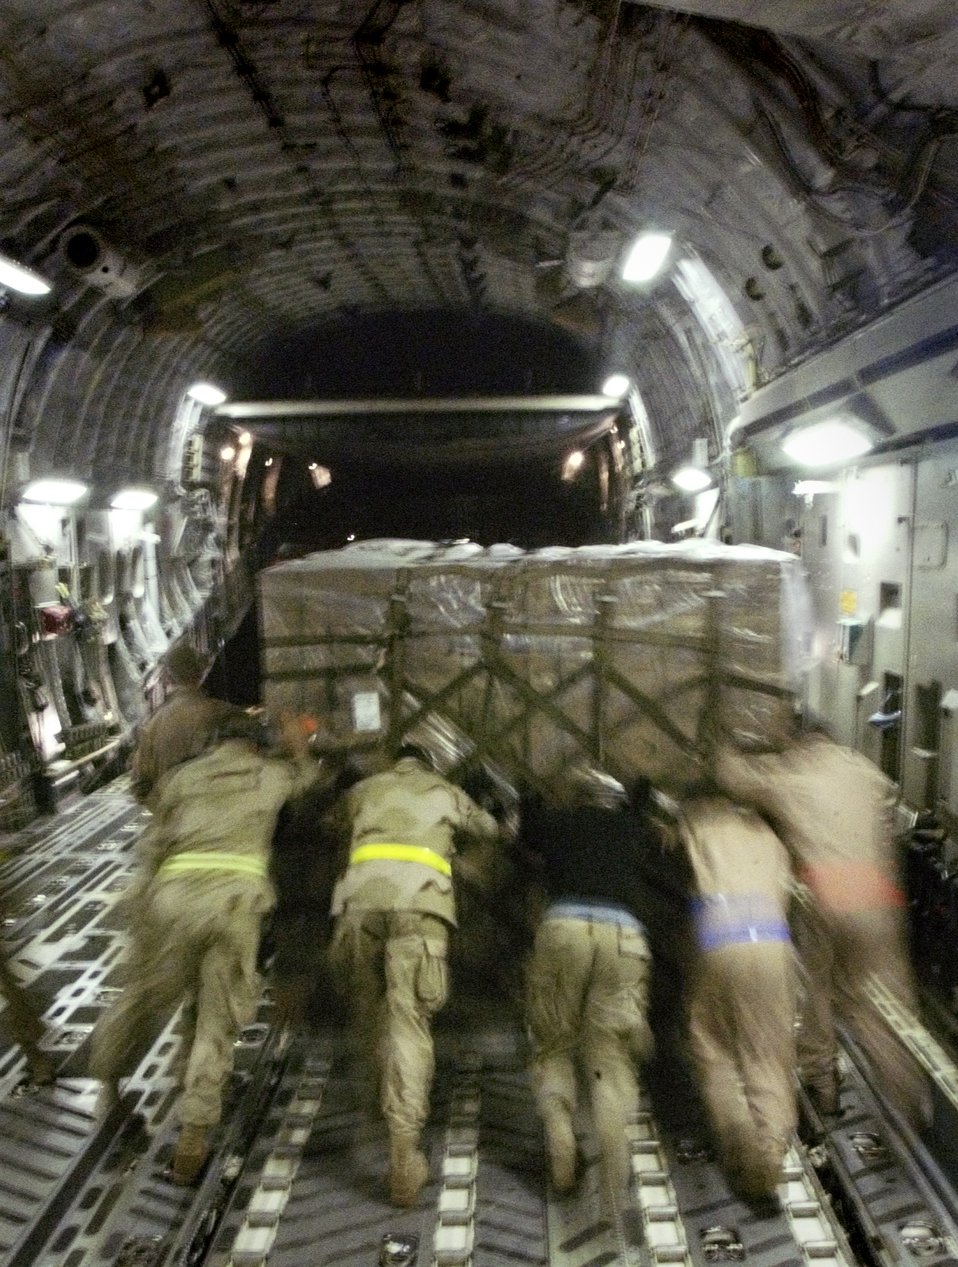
Team effort

CHAKLALA AIR BASE, Pakistan -- Airman offload relief supplies from a C-17 Globemaster III here Oct. 17. The Airmen, from the 818th Contingency Response Group at McGuire Air Force Base, N.J., deployed here to support earthquake relief efforts.